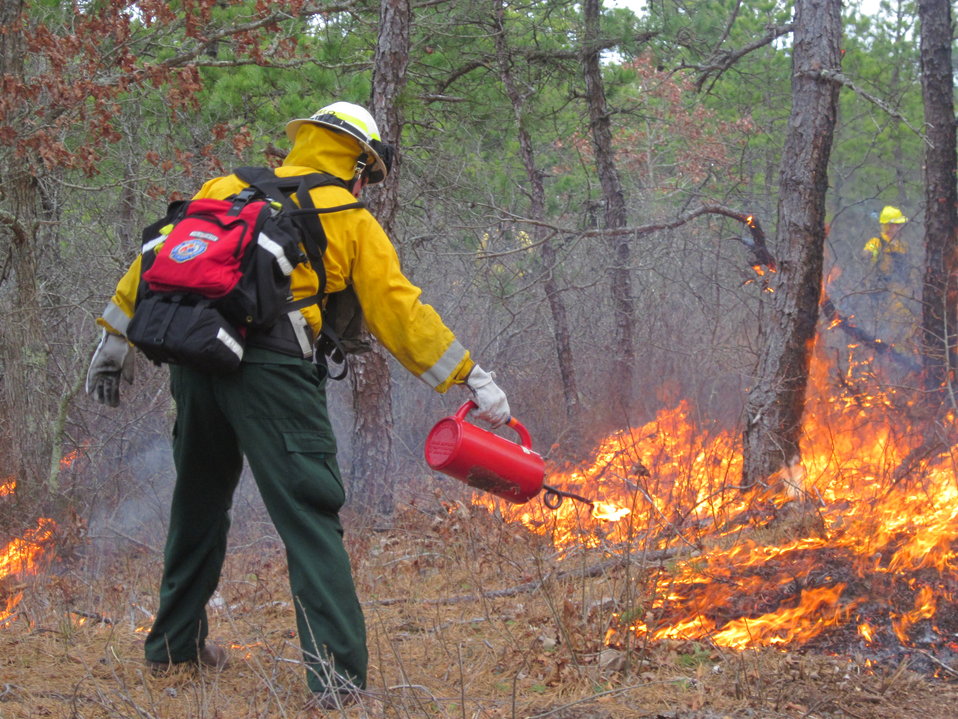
Test Firing

Mashpee, Massachusetts, April 5, 2012. A firefighter lights a test fire for a controlled burn at the Town of Mashpee Holland Hill Barrens area of Mashpee National Wildlife Refuge. Test burns help fire managers decide if a controlled burn will meet its objectives. In this case, the test fire showed that the burn would meet goals of reducing fire risk to neighboring homes and improving habitat for the New England cottontail. It was conducted by the Town of Mashpee, U.S. Fish and Wildlife Service, State of Massachusetts Department of Conservation and Recreation, and Northeast Forest and Fire Management.